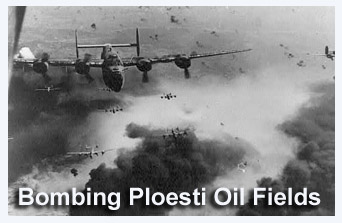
Bombing Ploesti oil fields

A second wave of bombing Ploesti oil fields occurred April through August 1944.